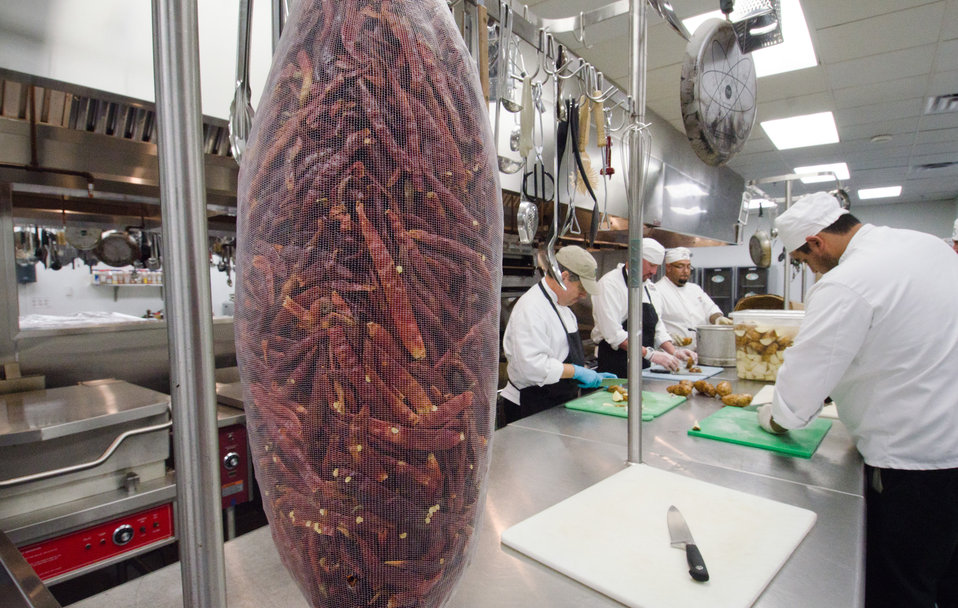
The San Antonio Food Bank (SAFB) Community Kitchen student team cut potatoes that will be cooked and mashed for Kids Cafe meals being prepared by Community Kitchen Class 35, in San Antonio, TX, on Monday, October 31, 2011. Other meals prepared by the Community Kitchen include the U.S. Department of Agriculture (USDA) Summer Food Service Program for children during summer months, and the year-round Child and Adult Care Feeding Program (CACFP). Because they cater to mostly Hispanic communities the use of dried red chili peppers remain in close reach (center). The Community Kitchen trains the unemployed, feeds the hungry, and generates public support and revenue through social enterprise. They began creating meals in 2003, with volunteers and the Community Kitchen students looking to further themselves in a promising culinary career. Over 16-week course individuals receive basic culinary training, similar to portions of an accredited culinary institution, to develop their culinary job skills. The program is lead by Chef Rudy Garza and his team of instructor chefs, present training and work demands that build useful job skills. The students focus their new talents on the preparation of meals for area shelters, kids cafes, summer feeding sites (www.summerfood.usda.gov/), and catering services. San Antonio Food Bank is a non-profit organization that serves as a clearinghouse by receiving and storing truckloads of donated food, produce, and other grocery. SAFB distribute these items to over 500 service agencies that help people in need.
“We couldn’t do what we do without our partnership with USDA’” said President and CEO Eric Cooper. He continues, “We are privileged in partnering (with the USDA) to feeding kids, through the summer, with the Summer Food Service Program, and throughout the year, with the Child and Adult Care Feeding Program (CACFP). Then in our approach to feeding seniors, we partner with USDA in the Commodities Supplemental Food Program (CSFP), and the Senior Farmer’s Market (Nutrition) Program. And then work to bring all our (needy) parties together with our Supplemental Nutrition Assistance Program (SNAP) Outreach. You know, once families have access to food we believe it is important to educate them. Through the support of the SNAP-Education Program we are able to educate them during their time of need. With this comprehensive approach we are really able to get the right food, at the right amount, at the right time, to needy families throughout our community – which allows us to feed the fifty-eight thousand we do, each week.”
SAFB serves 16 counties in Southwest Texas and states, “Nearly one out of every four children and one out of every five adults in Southwest Texas lives in poverty and has difficulty meeting basic nutritional needs.” According to SAFB, sixty-five percent of the people requesting emergency food have children. “Additionally, the senior citizens and those living on a fixed income generally have limited funds for a consistent grocery budget.”
San Antonio is the seventh largest city in the nation with surrounding farms and ranches near its rivers and water supplies. When available they provide fresh surplus produce. Other commodities come from the food industry and manufacturers. The major food brand companies that for various reasons have surplus commodities donate it to SAFB.
The United States Department of Agriculture donates commodities through programs such as The Emergency Food Assistance Program (TEFAP), while Texas farmers supply fresh produce to their Fresh Produce Program.
Public donations come in the form of money, food, volunteer time, and advocacy. Their fleet of trucks to pickup and deliver food as needed.